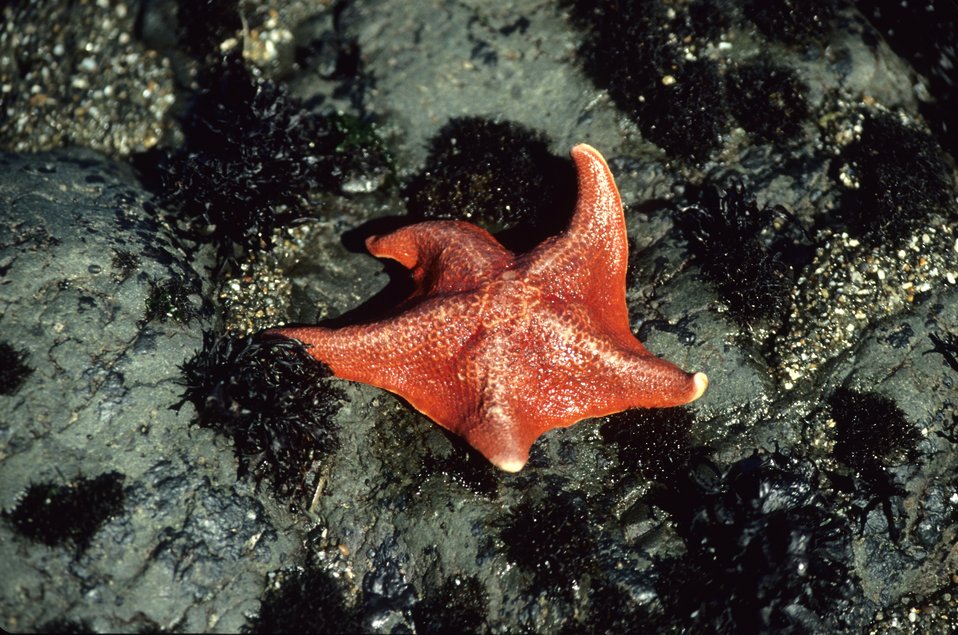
A reddish-orange bat seastar (Patiria miniata)